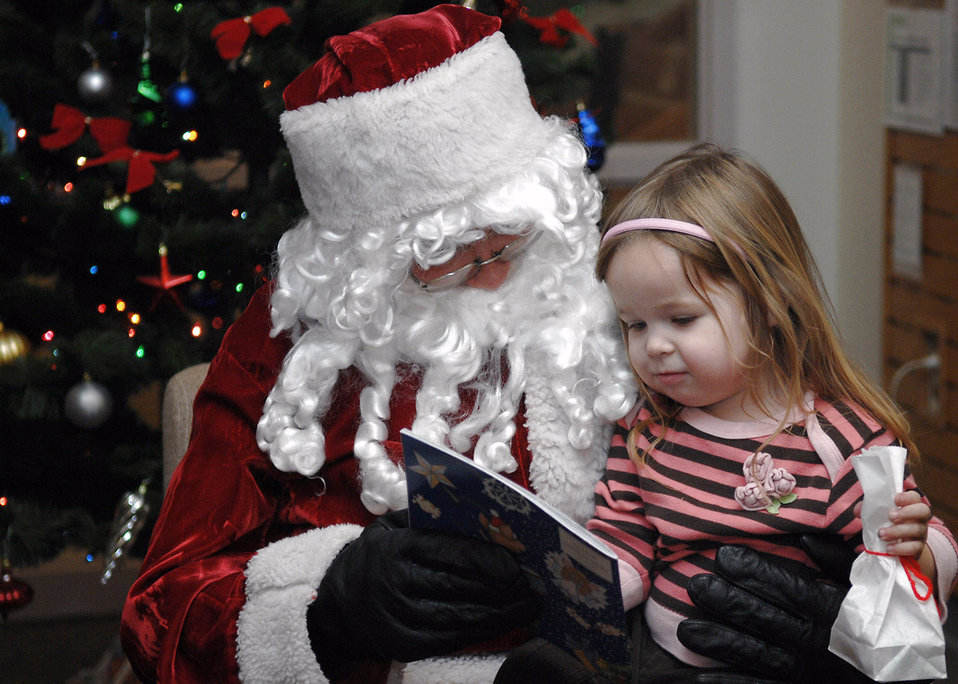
Once upon a time

Kaytlyn Barrett sits on Santa's lap Dec. 17 at the base library at Holloman Air Force Base, N.M. Santa gave a bag of candy and a book to all children who attended story time.